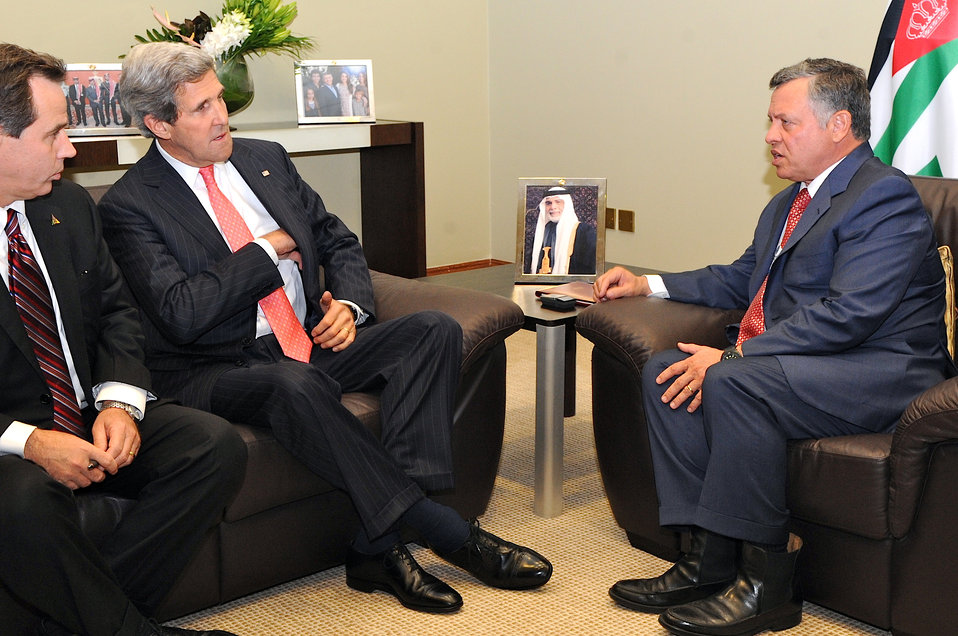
Secretary Kerry Meets With King Abdullah II Before World Economic Forum in Jordan

U.S. Secretary of State John Kerry, accompanied by U.S. Ambassador to Jordan Stuart E. Jones, meets with King Abdullah II ibn Al-Hussein before a session of the World Economic Forum in Dead Sea, Jordan, on May 26, 2013.